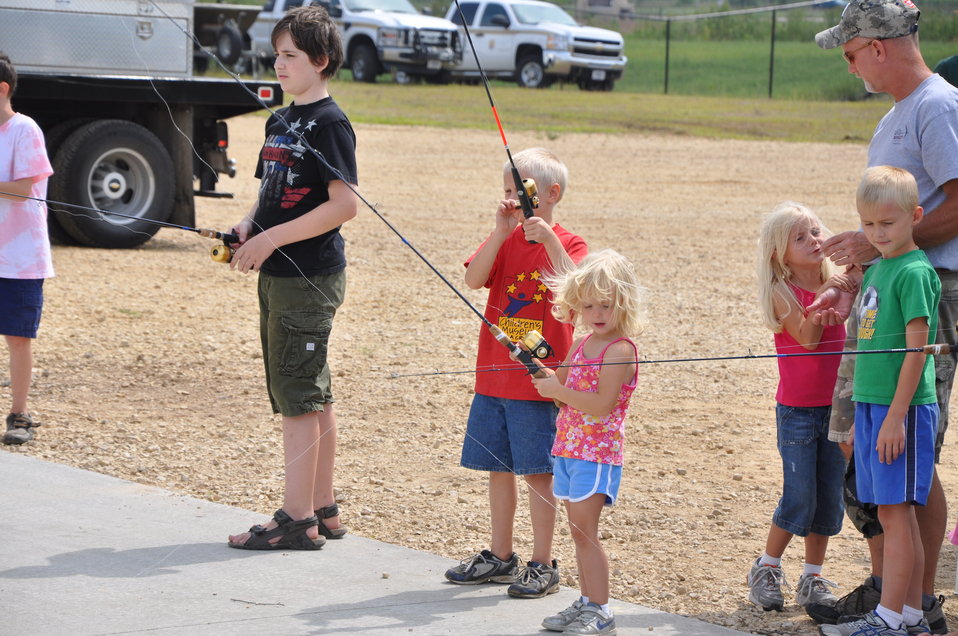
Practicing casting at La Crosse visitor center